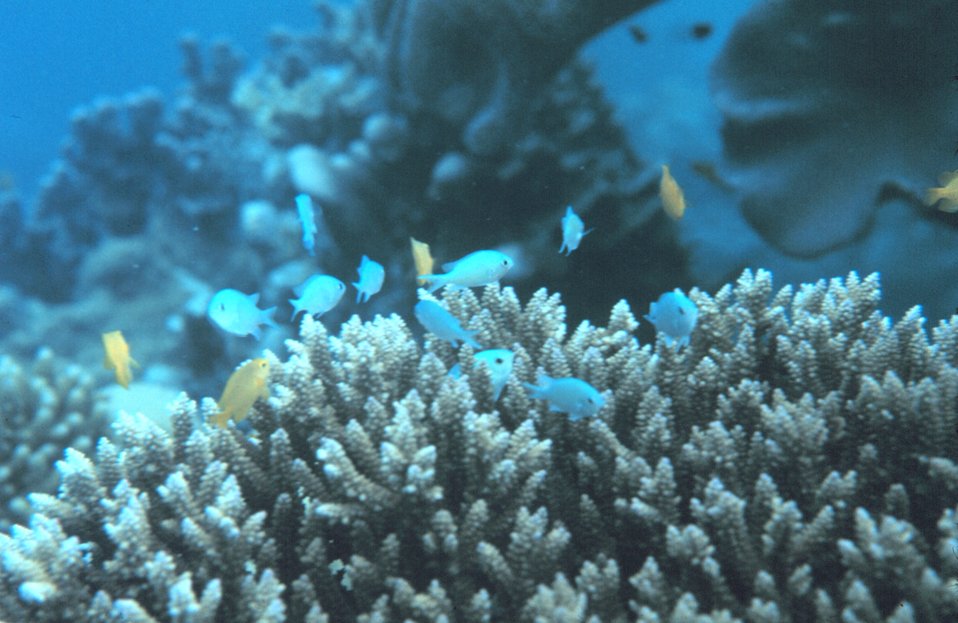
Two types of Chromis sp. on acropora coral head. Fish feed on zooplankton from water column. These fish use the coral for protection from predation